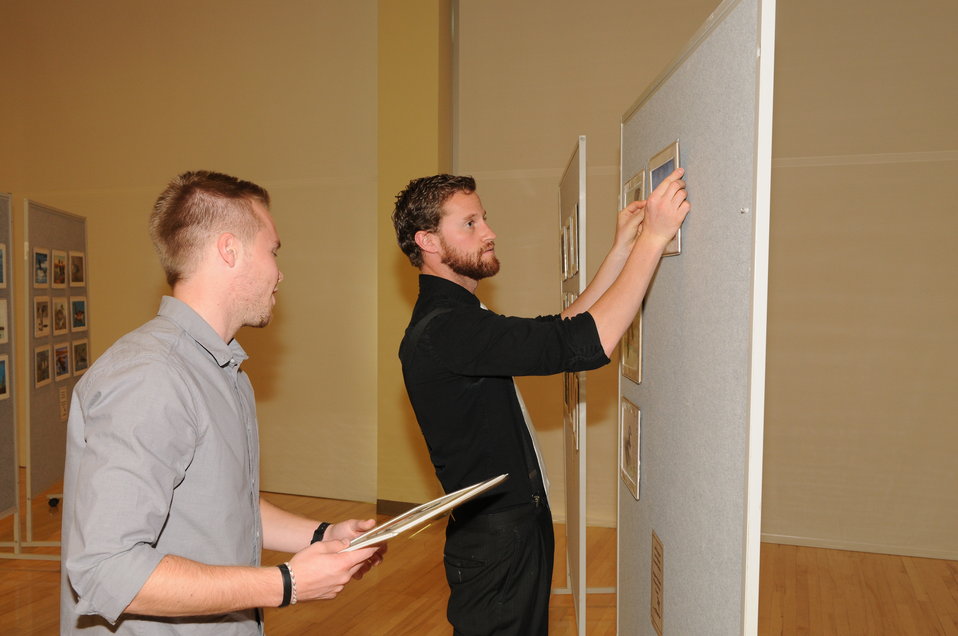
Artwork Hanging

The U.S. Fish & Wildlife Service sponsored the 2012 Federal Duck Stamp Art Contest September 28 and 29 in Ogden, Utah, at Weber State University. A panel of five judges was responsible for choosing the art work used to design the 2013-2014 Migratory Bird Hunting and Conservation Stamp.